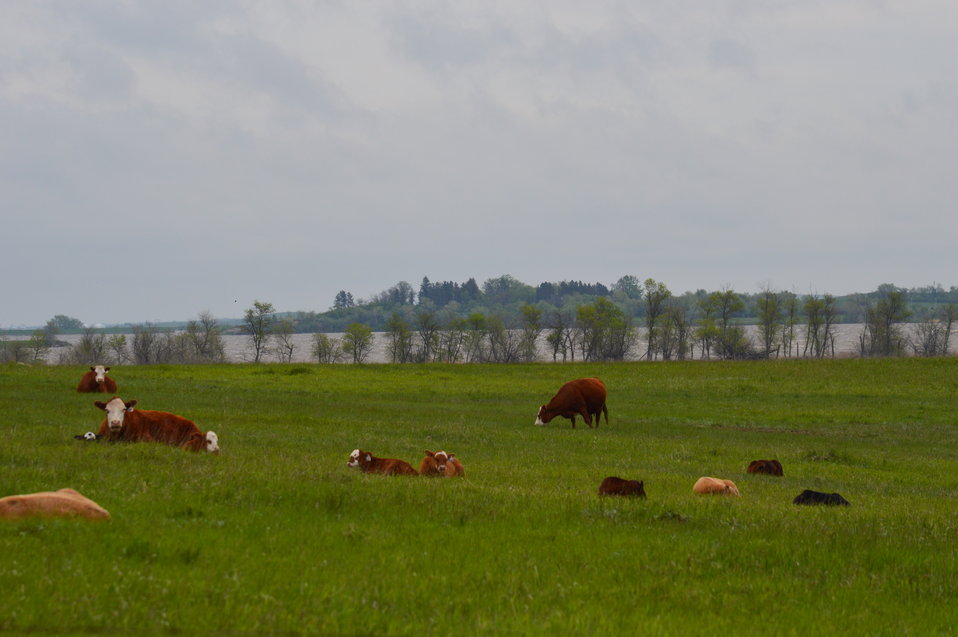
Cattle and Lake Ilo

Scenery and wildlife at Lake Ilo National Wildlife Refuge in North Dakota